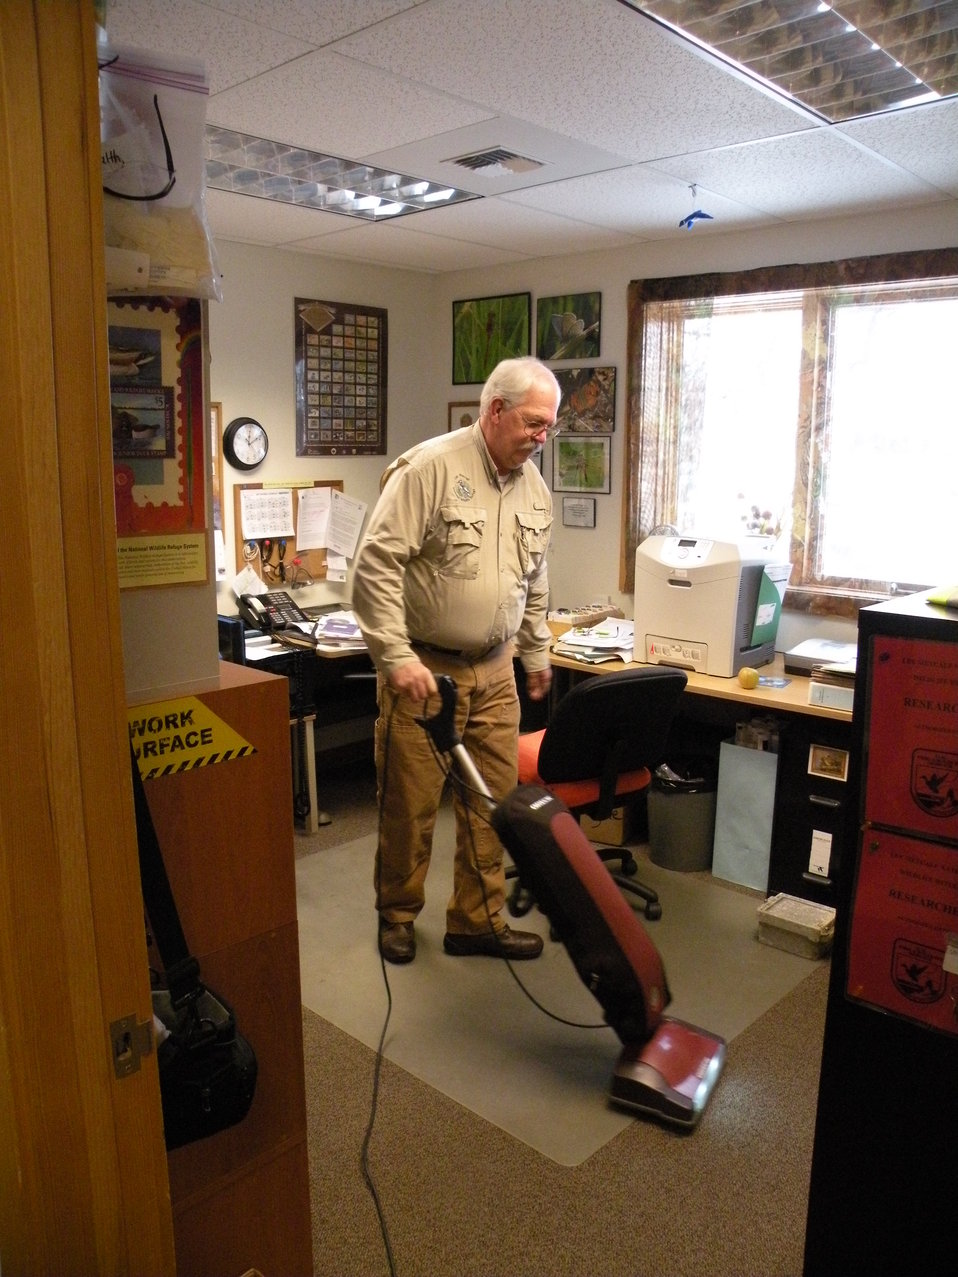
Volunteer Terry Harkins doing an excellent job of cleaning the office at Lee Metcalf National Wildlife Refuge.